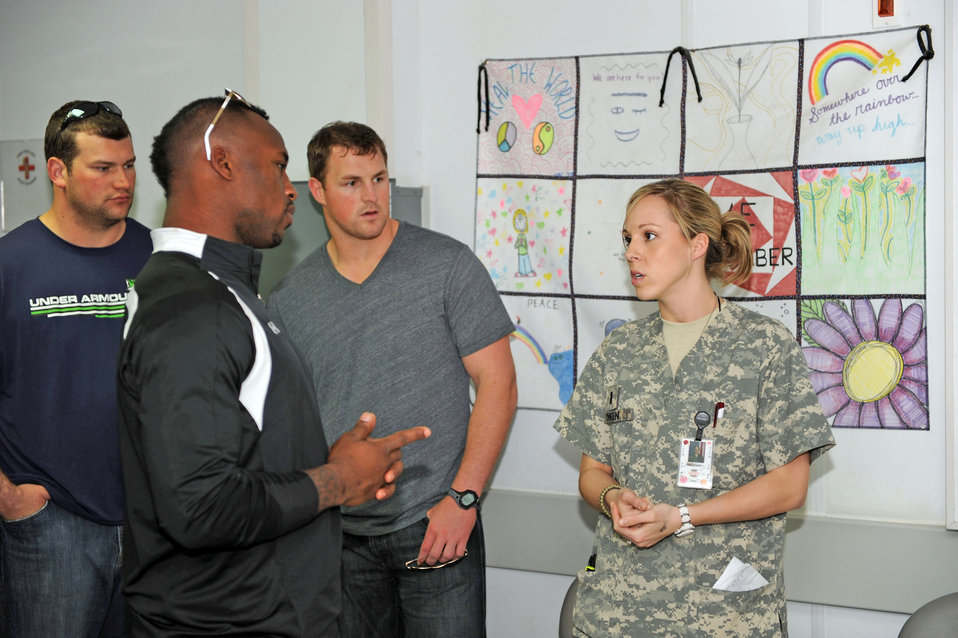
NFL players visit Bagram Airmen

1st Lt. Candice Owen explains basic hospital procedures to National Football League players during a visit to the Craig Joint Theater Hospital March 5, 2010, at Bagram Airfield, Afghanistan. Lieutenant Owen is a 455th Expeditionary Medical Group/Task Force Medical clinical nurse.